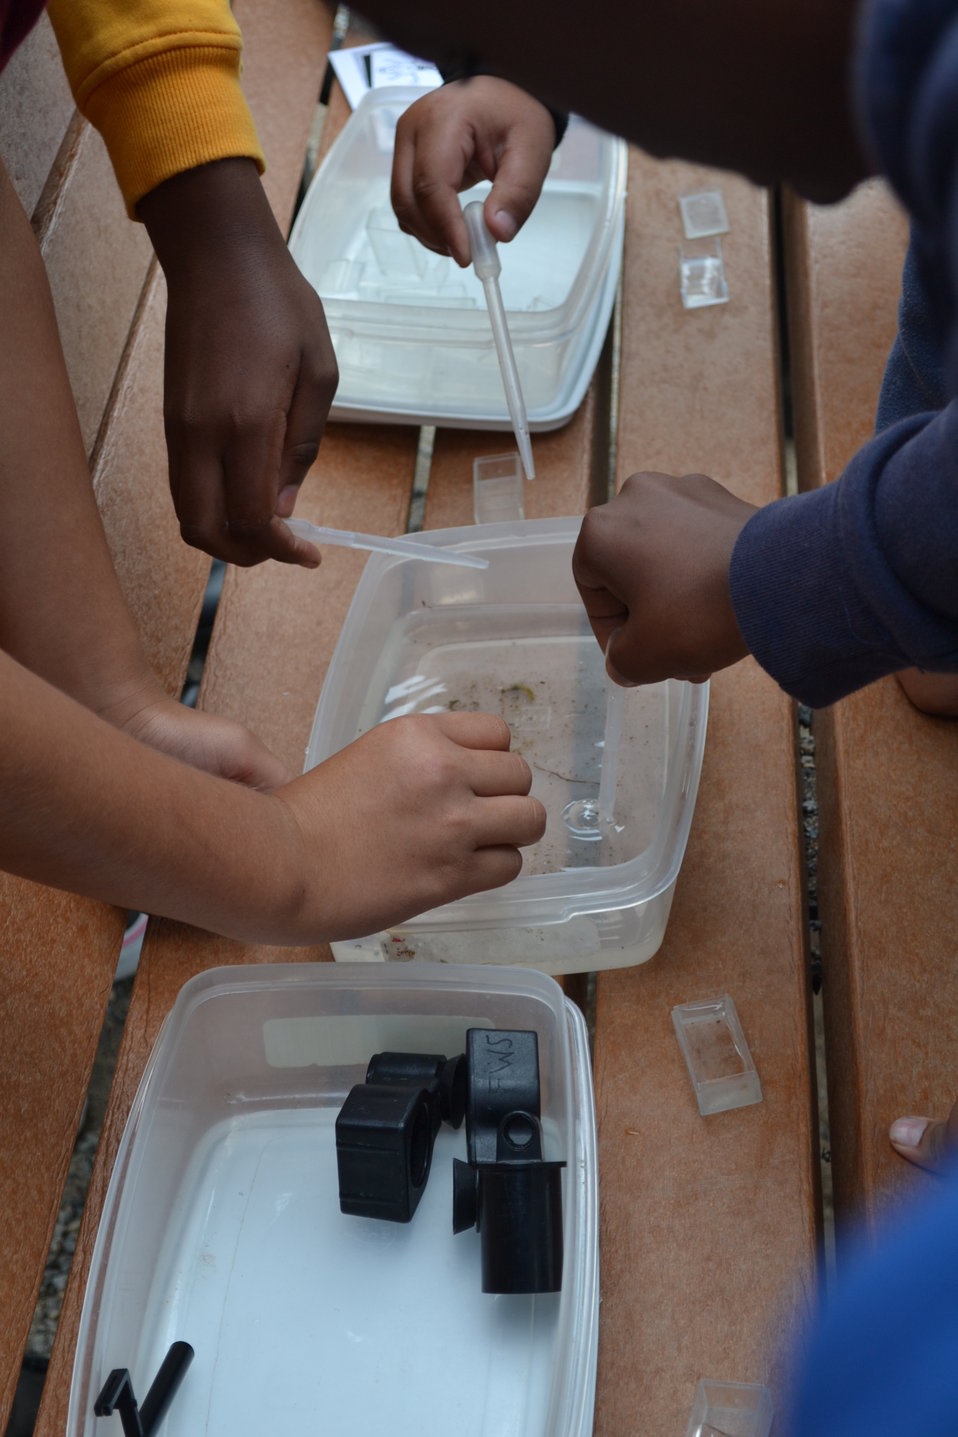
Dipping scientific droppers into the marsh water for study

The water sucked up by the droppers go into a small plastic container, where the students will hold it up to a magnifying glass and look for moving or drifting plankton